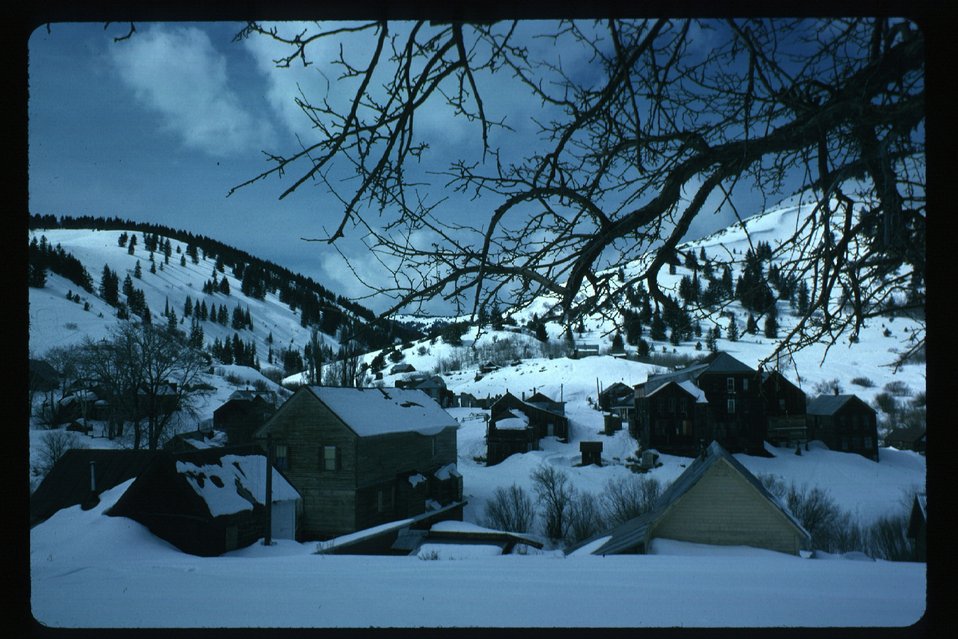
Architecture Silver City Cultural Resources Owyhee Field Office LSRD Lower Snake River District